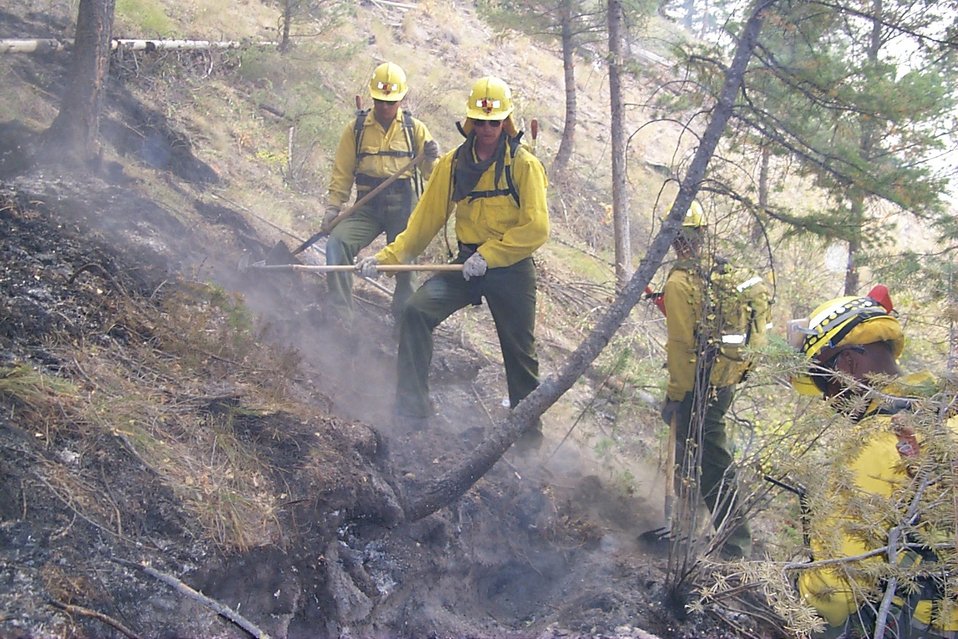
Line crew Fire Clearwater Fire Salmon Field Office USRD Upper Snake River District